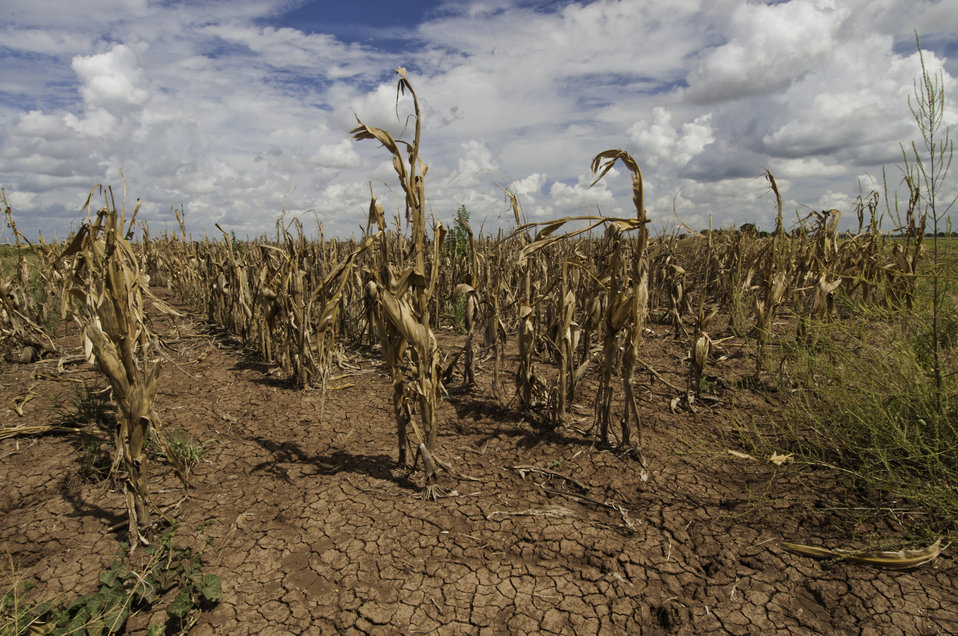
Corn shows the effect of the drought in Texas on Aug. 23, 2013.